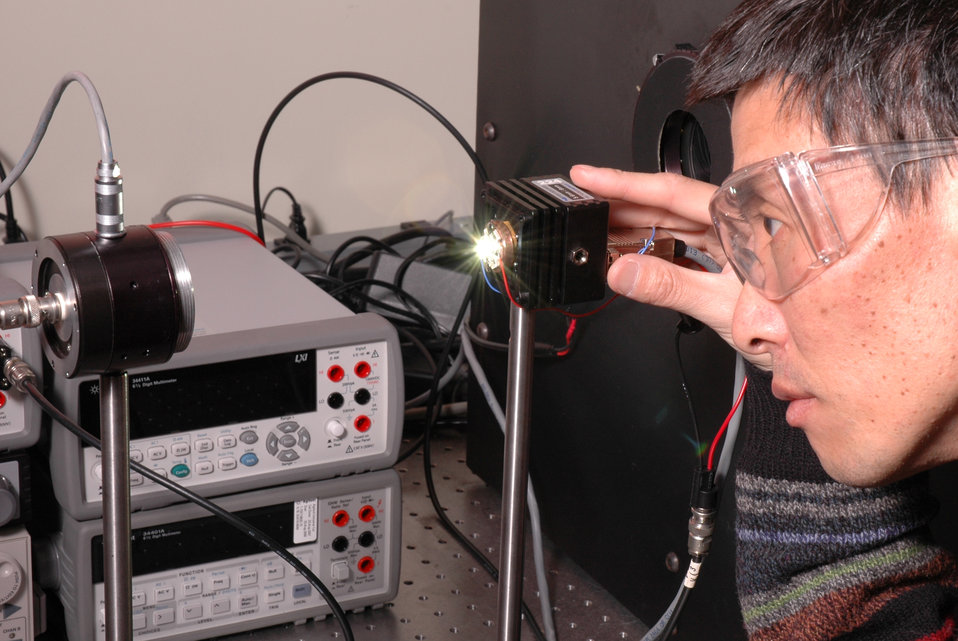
LED Standands

NIST scientists Yuqin Zong (pictured) and Yoshi Ohno have developed a new method for measuring the optical properties of high power LEDs that will allow manufacturers to accurately obtain and compare data. By mounting the LED on a temperature controlled heat sink, the researchers can test the LEDs at their normal operating temperature (important to commercial manufacturers) at high speed (important to LED manufacturers).